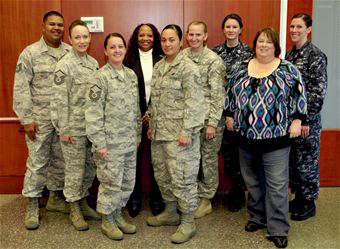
SARC helps all callers

Tech. Sgt. John Hayes, Master Sgt. Lisamichelle Hughes-Belt, Master Sgt. Karen Cain, Peggy Moore-McCoy, Tech. Sgt. Annie Fernandez, Maj. Alisa Englert, Petty Officer 1st Class Amanda McNeely, Tammy Jordan, and Petty Officer 1st Class Erika Burrell, all of whom are victim advocates at Buckley Air Force Base, Colo., pose for a photo Nov 5, 2010.